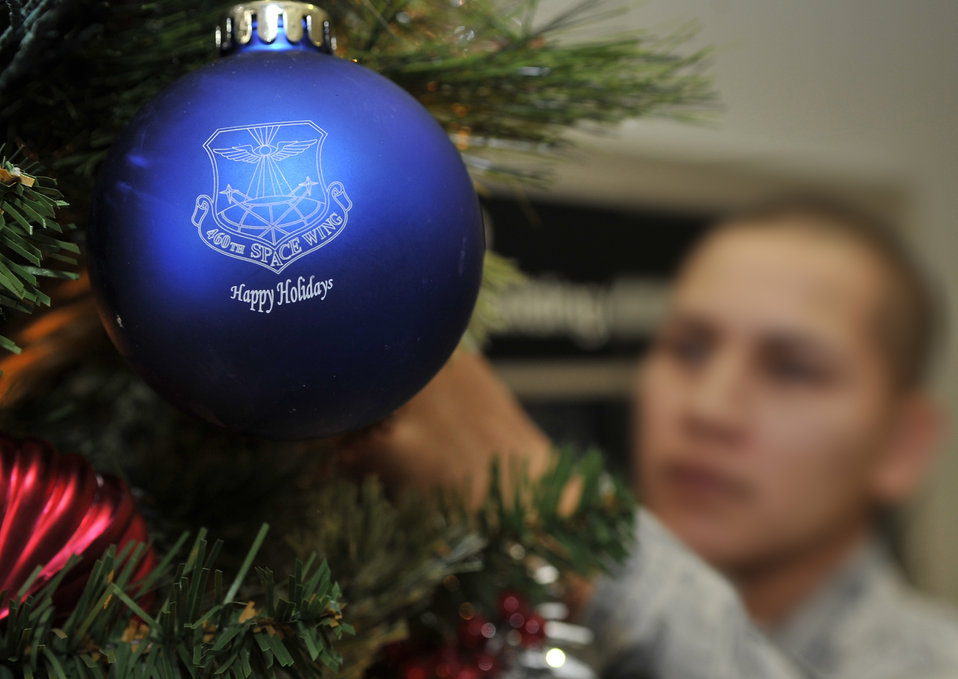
Happy Holidays from Buckley

The final touches are on the tree as Buckley Air Force Base, Colo., prepares for the upcoming holiday cheer.